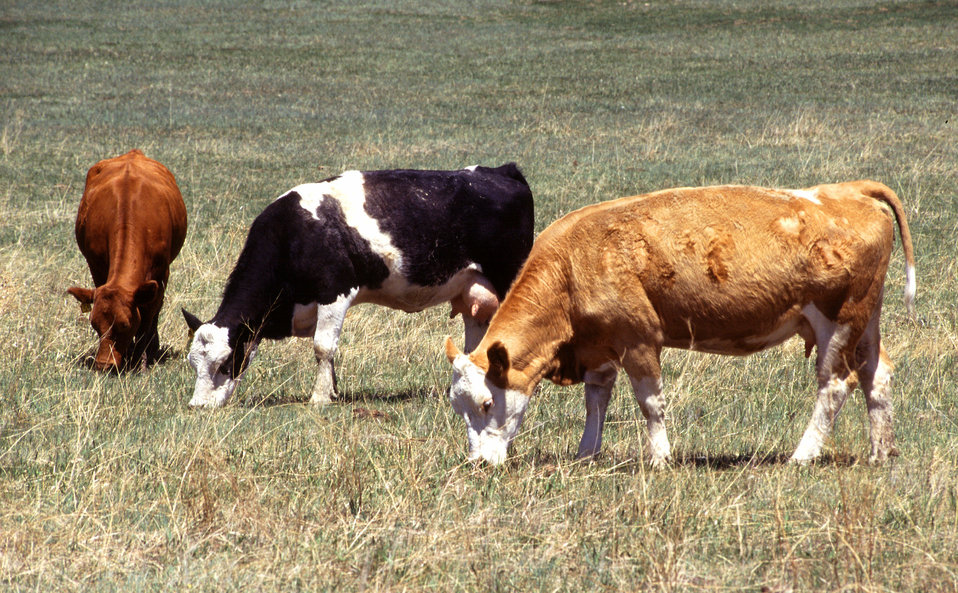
Dryland cattle graze on the Great Plains in Colorado on Feb. 25, 2008. Each cow on a pasture can emit about 350 liters (230 grams) of methane per day.